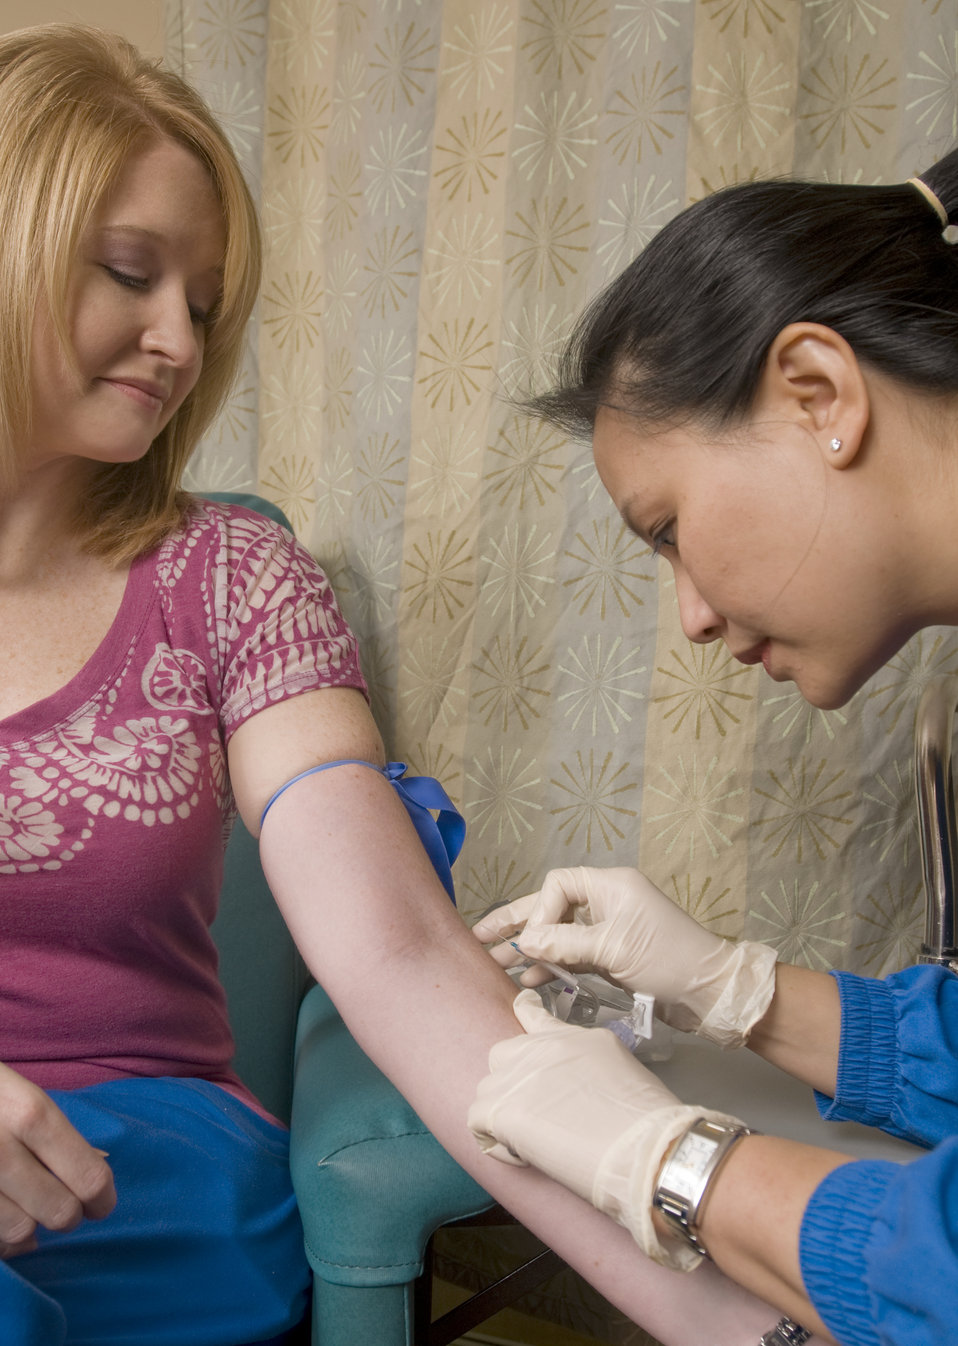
This image depicts a female patient seated in a clinic, who was in the process of having some blood extracted from her left arm's antecubital vein during a phlebotomy procedure. The gloved hands of the fenale phlebotomist are seen securing the venipunture site: right hand holding the needle tipped catheter; right hand being used to determine the location of the antecubital vein.